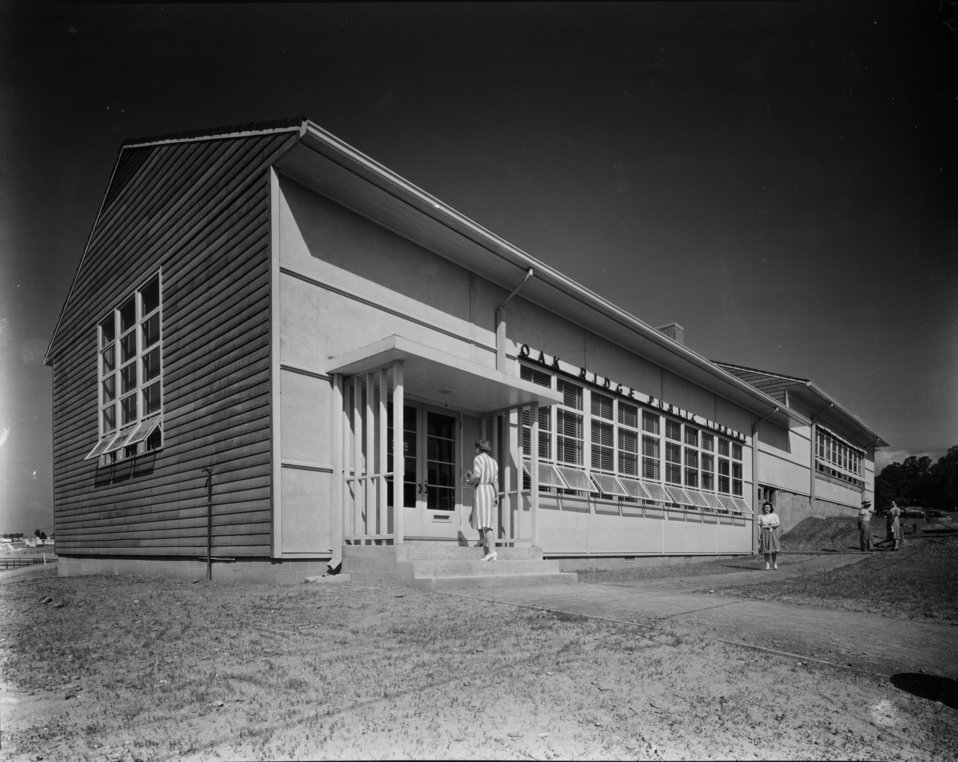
Services at Oak Ridge